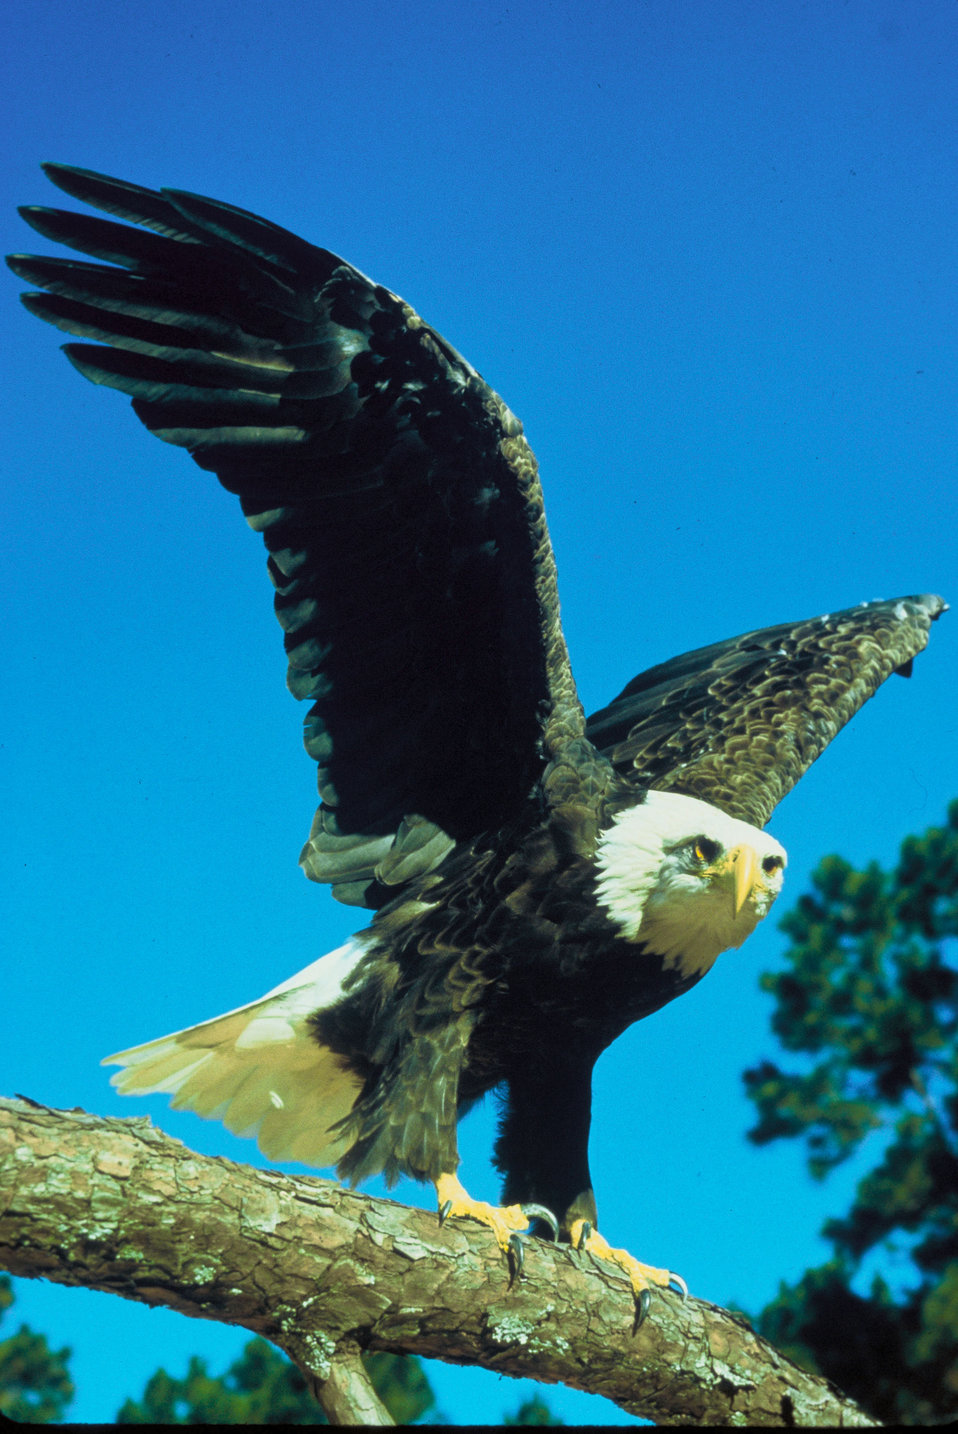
Bald Eagle.